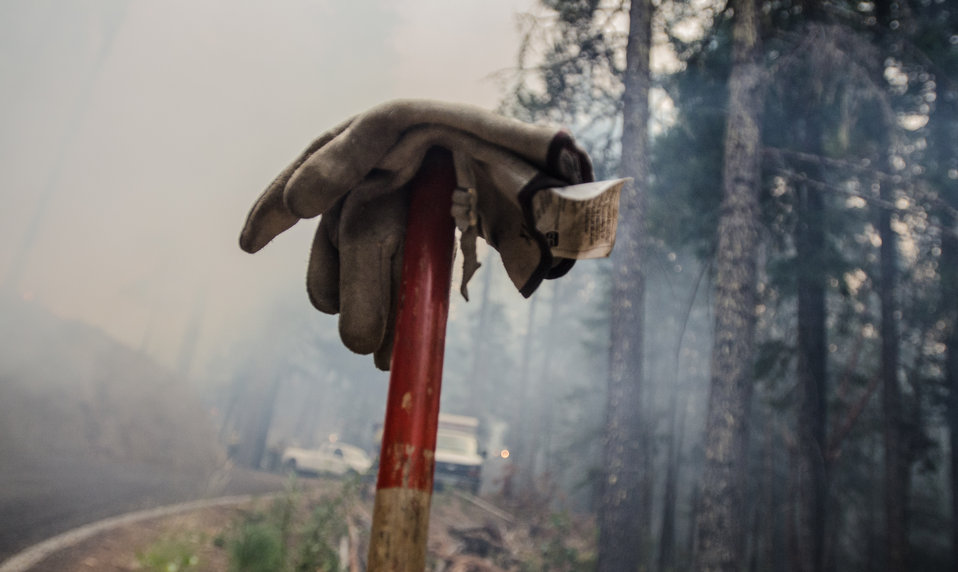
Geronimo Interagency Hotshot Crew, Department of the Interior (DOI) Indian Affairs (IA) Bureau of Indian Affairs (BIA) San Carlos Agency in Arizona; on assignment at the Big Windy Complex Wildlands Fire, approximately 15 miles west of Interstate-5 and East Northeast of Galice, Oregon, conducts a prescribed burn 'burnout' operation to help stop the main fire that may head toward this roadway, on Friday, Aug 9, 2013. The primary mission of the Interagency Hotshot Crews (IHC) is to provide a safe, organized, mobile and highly skilled hand crew for all phases of wildland fire suppression. The arduous duties and specialized assignments required of IHC personnel require uniform staffing, certification, training, equipment, communications, transportation, organization, and qualifications that adhere to interagency standards and guidelines.